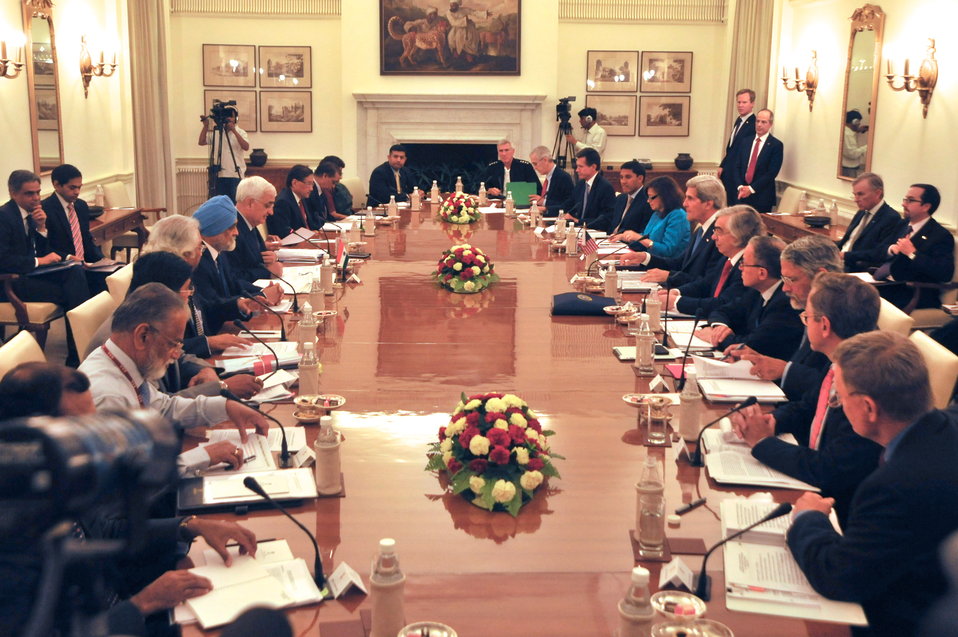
Secretary Kerry Participates in a Meeting With Indian External Affairs Minister Khurshid

U.S. Secretary of State John Kerry participates in a meeting with Indian External Affairs Minister Salman Khurshid before the U.S.-India Strategic Dialogue in New Delhi, India, on June 24, 2013.